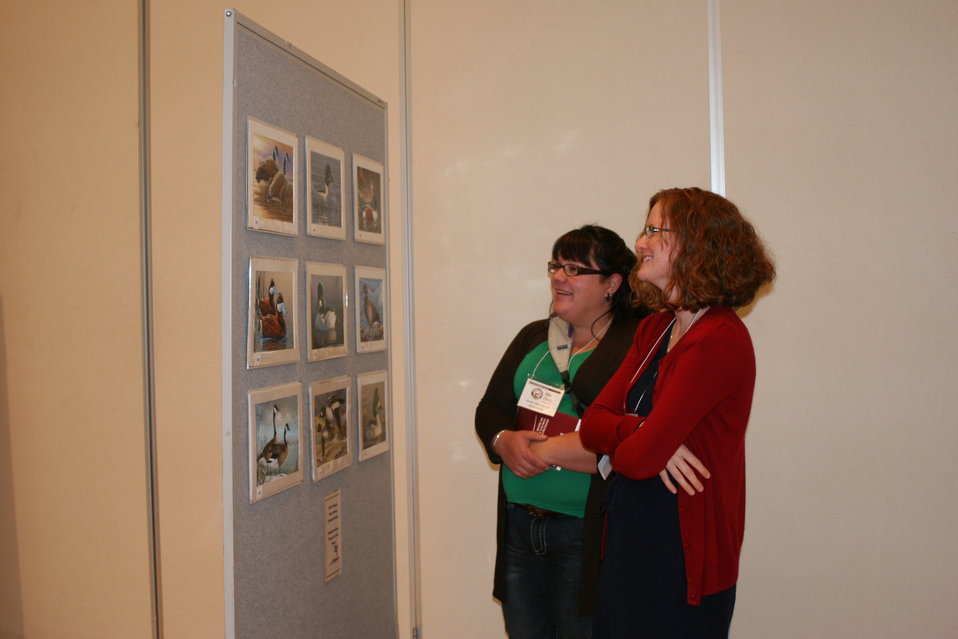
Artwork Viewing

Photo Credit: Suzanne Fellows / USFWS
The U.S. Fish & Wildlife Service sponsored the 2012 Federal Duck Stamp Art Contest September 28 and 29 in Ogden, Utah, at Weber State University. A panel of five judges was responsible for choosing the art work used to design the 2013-2014 Migratory Bird Hunting and Conservation Stamp.